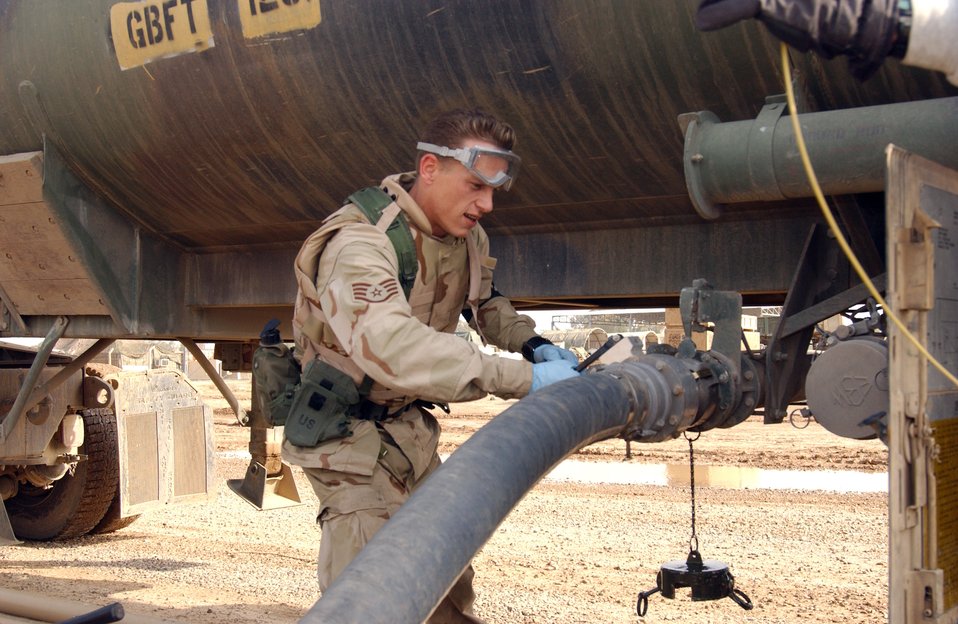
Fill 'er up

BALAD AIR BASE, Iraq (AFPN) -- Staff Sgt. David Homer connects an R-22 to a tank truck to offload it into one of the squadron's fuel bladders. The tank truck holds 7,000 gallons and the bladder holds 200,000 gallons. Sergeant Homer is with the 332d Expeditionary Logistics Readiness Squadron.